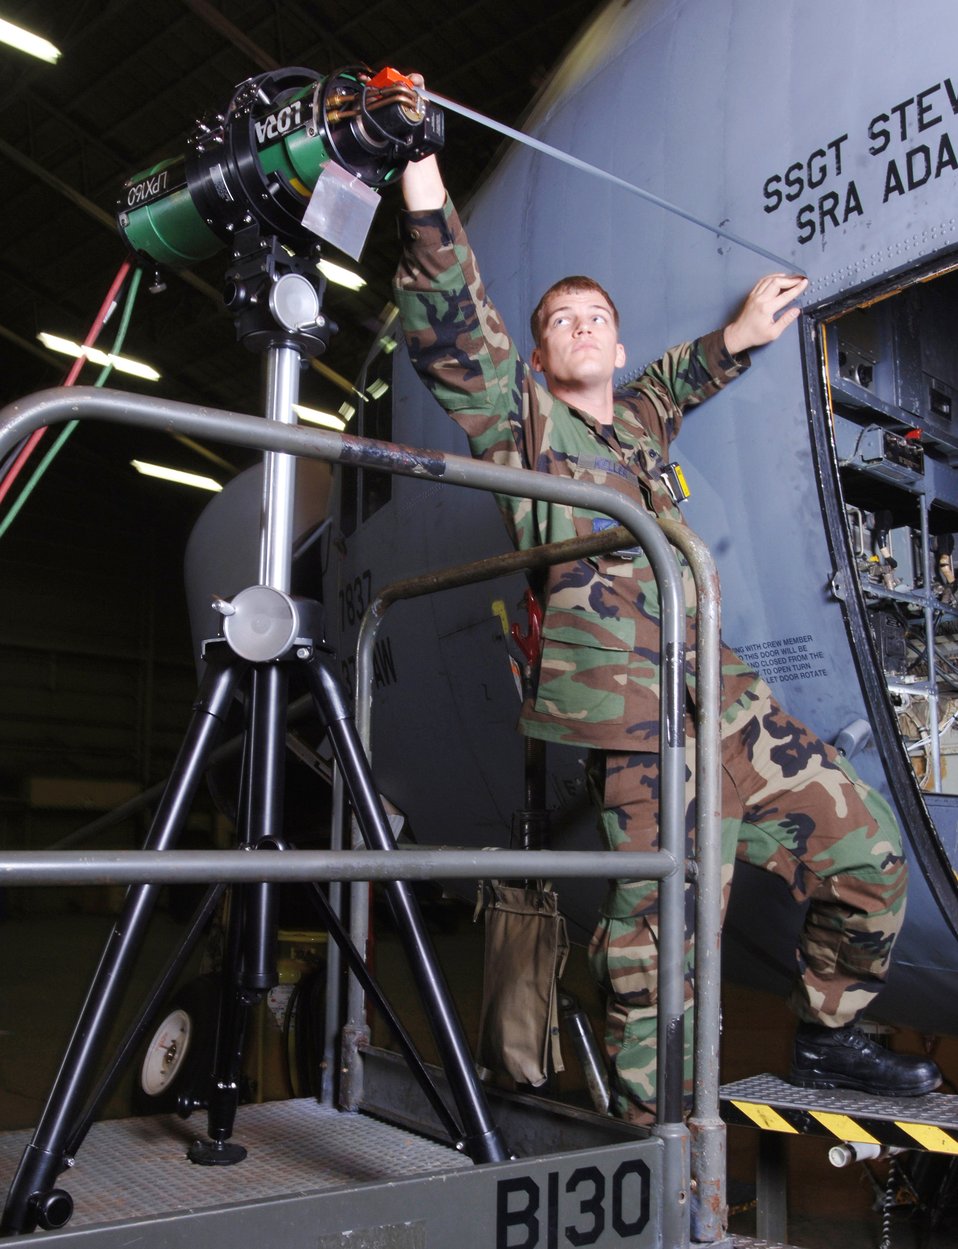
X-ray eyes

YOKOTA AIR BASE, Japan -- Senior Airman Jonathan Keller measures the distance between his Lorad portable X-ray equipment and the crew door of a C-130 Hercules aircraft inside a hangar here. The Airman is checking the aircraft door frame for structural cracks. The nondestructive inspection technician assigned to the 374th Maintenance Squadron here uses the X-ray and advanced technology to examine the uniformity, quality and serviceability of components of assigned and in-transit aircraft.